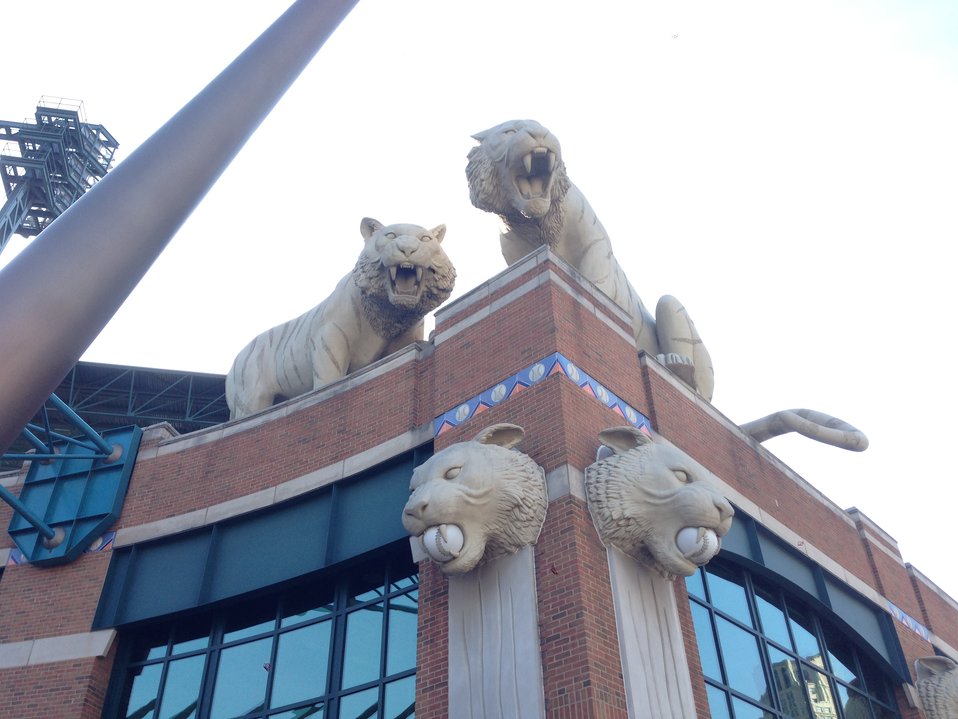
Statues at the Detroit Tiger's Stadium